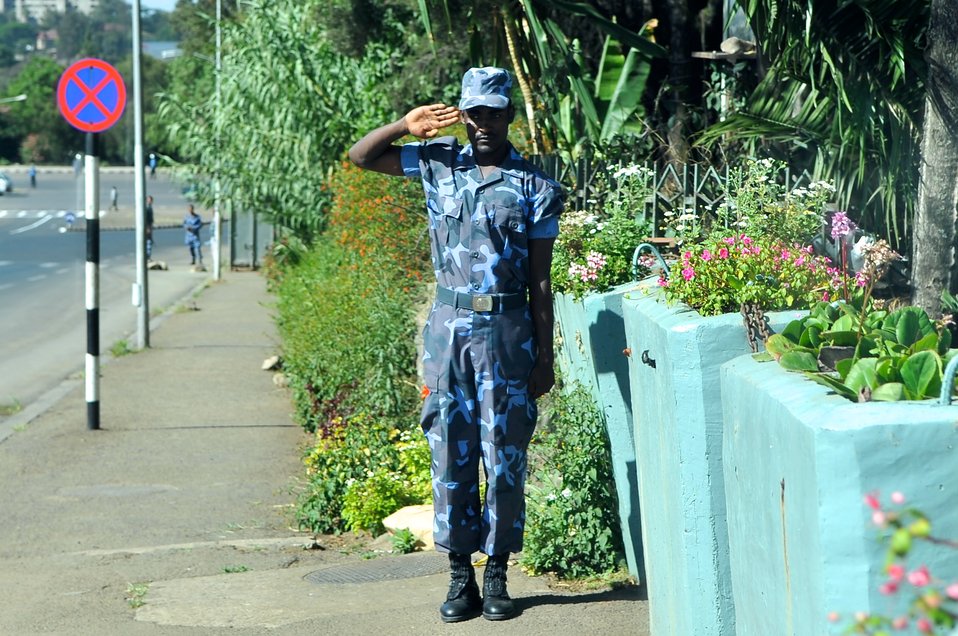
Ethiopian Federal Policeman Salutes As Secretary Kerry Arrives to Meeting Foreign Minister in Addis Ababa

An Ethiopian Federal Policeman salutes as U.S. Secretary of State John Kerry arrives to meet with foreign ministers from Ethiopia, Kenya, and Uganda in Addis Ababa, Ethiopia, on May 1, 2014.